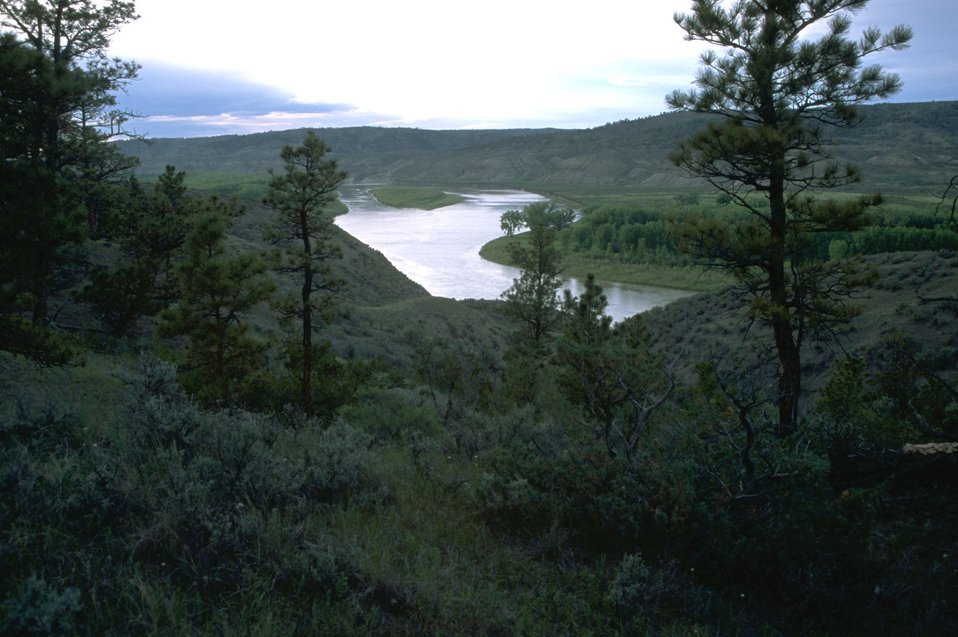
The Missouri River